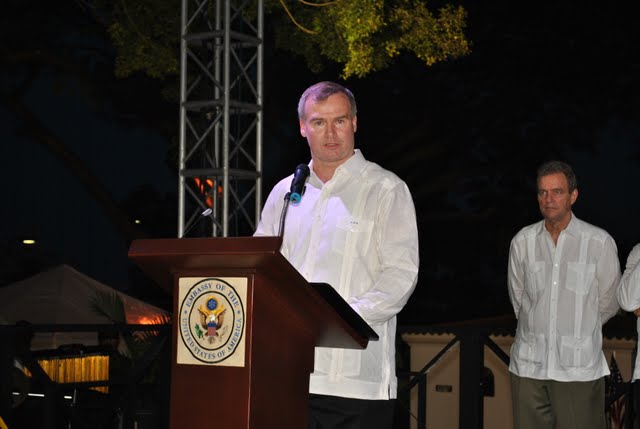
July 4th Celebration at U.S. Embassy in the Dominican Republic

Chargé dÁffaires Christopher Lambert addresses the guests and Embassy staff at the U.S. Independence Day celebration at the U.S. Embassy Santa Domingo in Dominican Republic at the Chief of Mission's Residence on July 2, 2010.